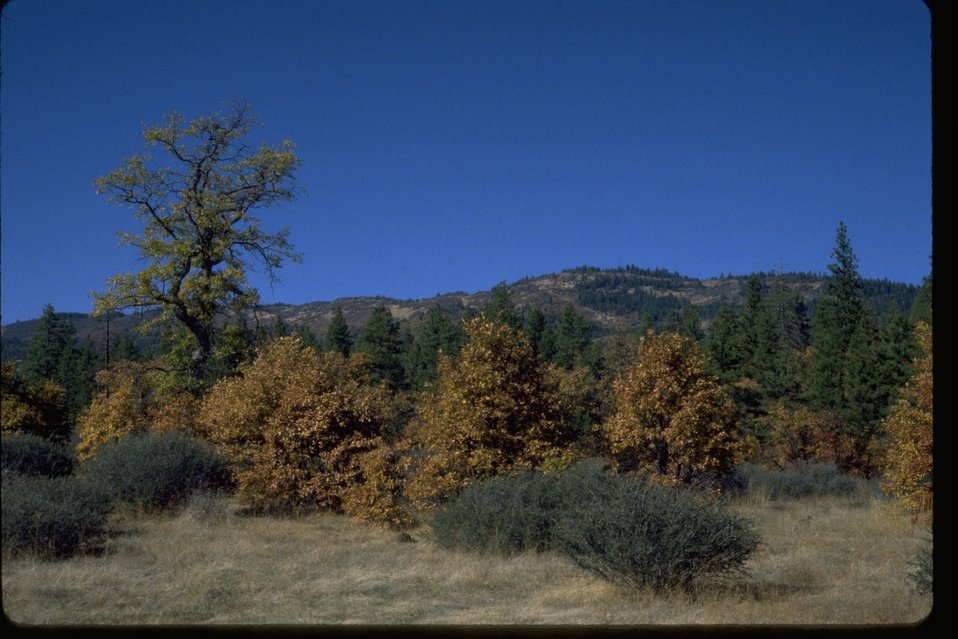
Agate Flats, along with Skookum Creek and Soda Mountain.